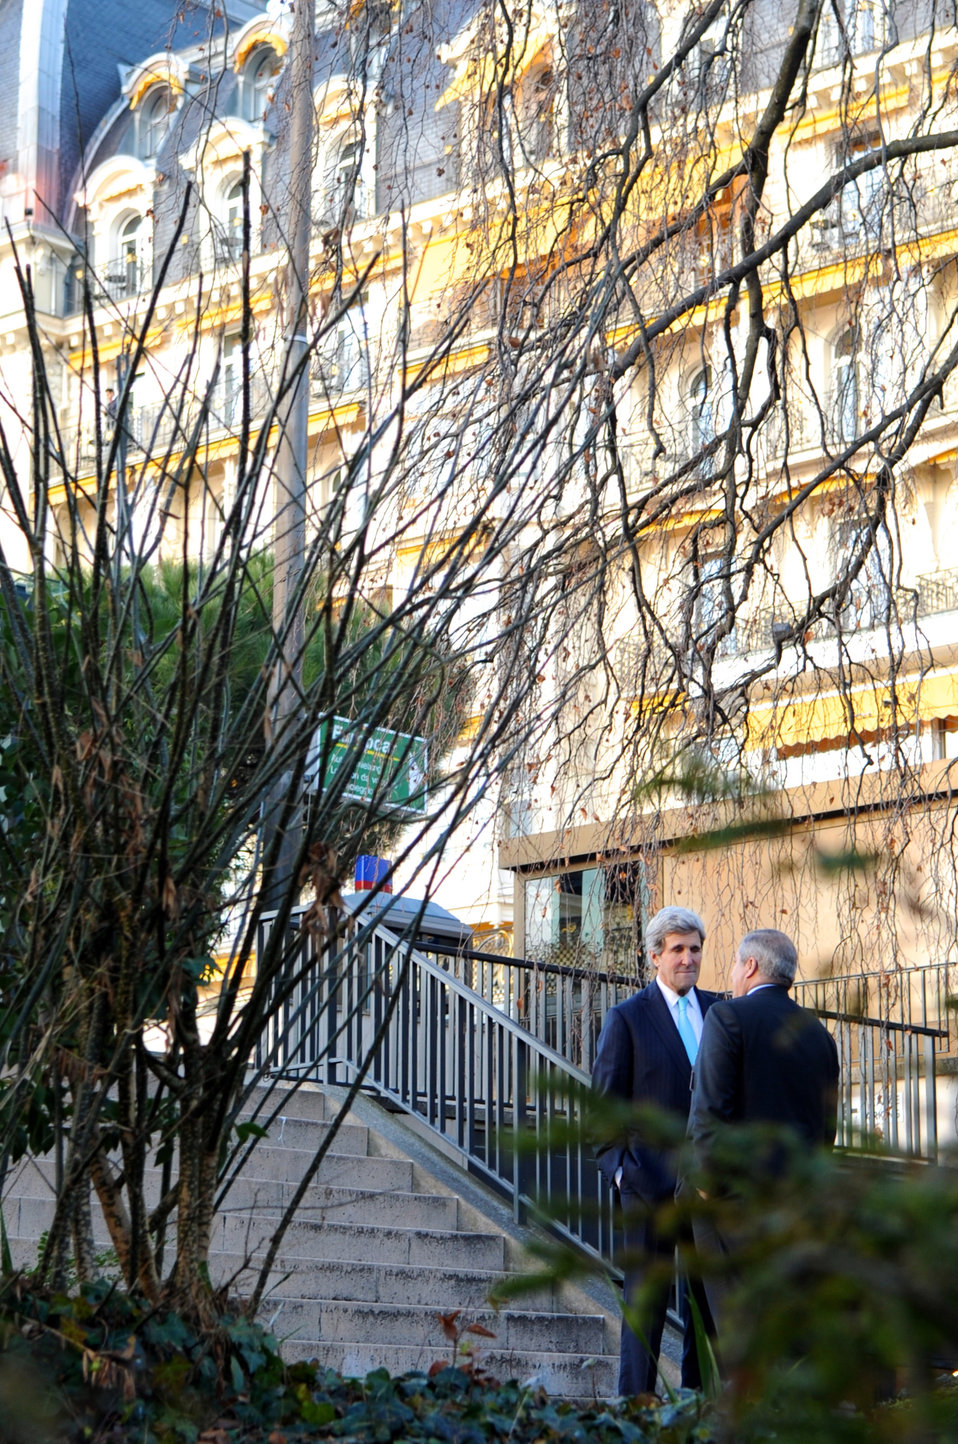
Secretary Kerry Meets With Jordanian Foreign Minister Judeh at Geneva II Conference

U.S. Secretary of State John Kerry and Jordanian Foreign Minister Nasser Judeh hold a one-on-one discussion on the margins of the Geneva II conference in Montreux, Switzerland, on January 22, 2014.